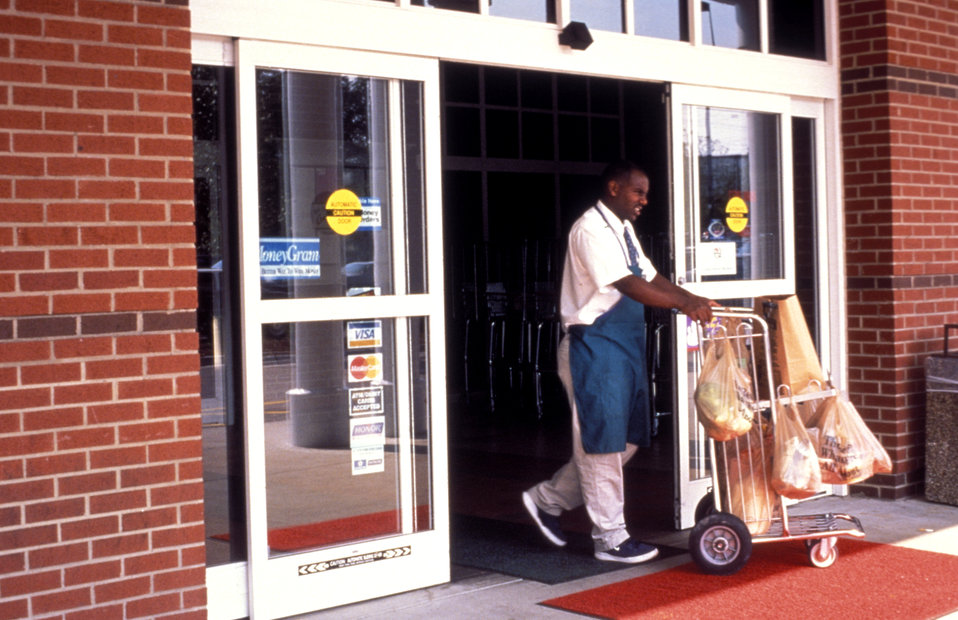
Carrying groceries from the store

In this 1996 image, a grocery store attendant was shown exiting the store through its automatically-controlled front entrance, while he was pushing a cart laden with bags of groceries. The safe mode of pushing the cart required that both hands be used, in order to guide it along its path to the vehicle, which he'd then load. With both his hands occupied by the cart, it would have been very difficult to open a door while exiting the store, and avoid its closure, had the portal not been electronically controlled with an electric eye. Widely used, 'no-touch' automatic doors accommodate all types of users, including the mobility-challenged, as well as those whose hands are filled with purchases. Simple, and in common use, the wide automatic door is an excellent example of Universal Design.